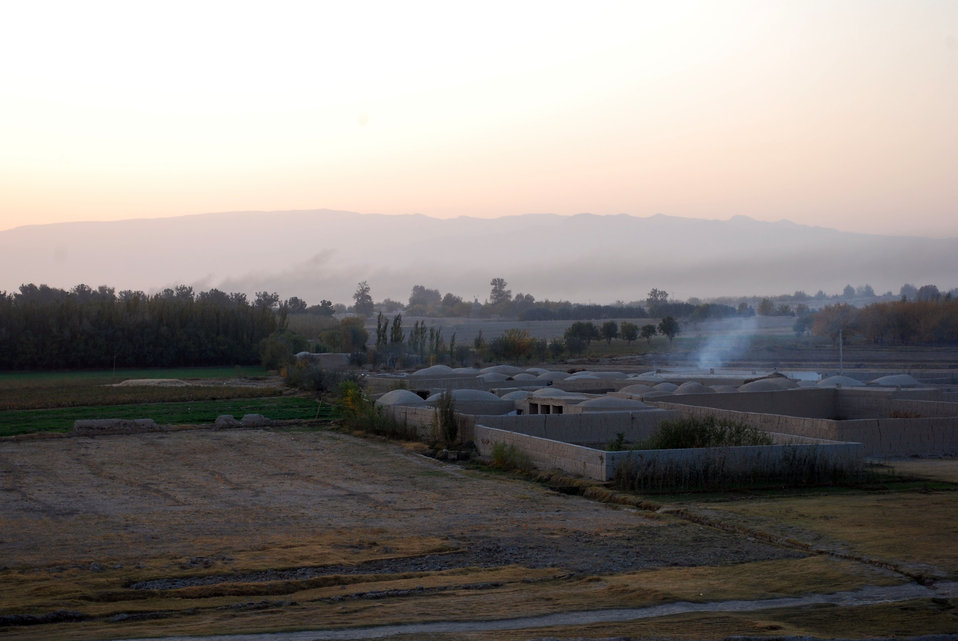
'On the Road' in Balkh Province